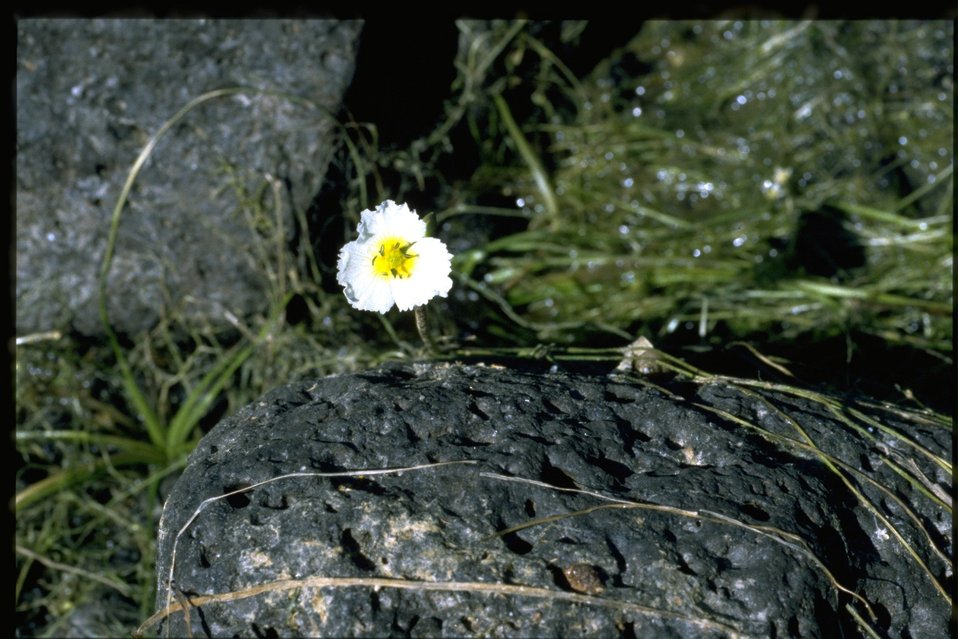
Farshot of Fringed Water Plantain wildflower.